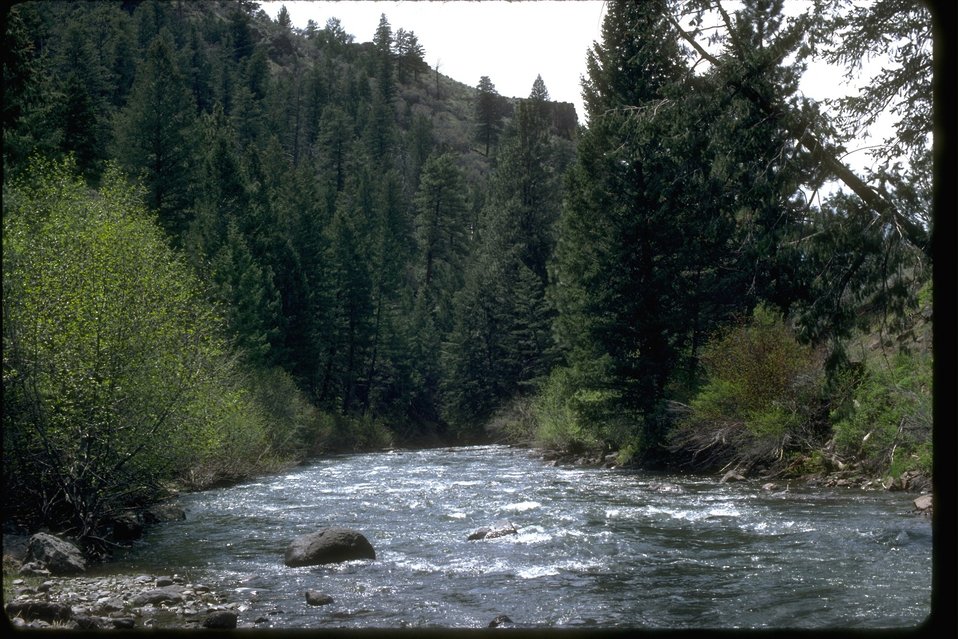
Malheur River-Bluebucket Creek Wilderness Study Area. OR 2-14